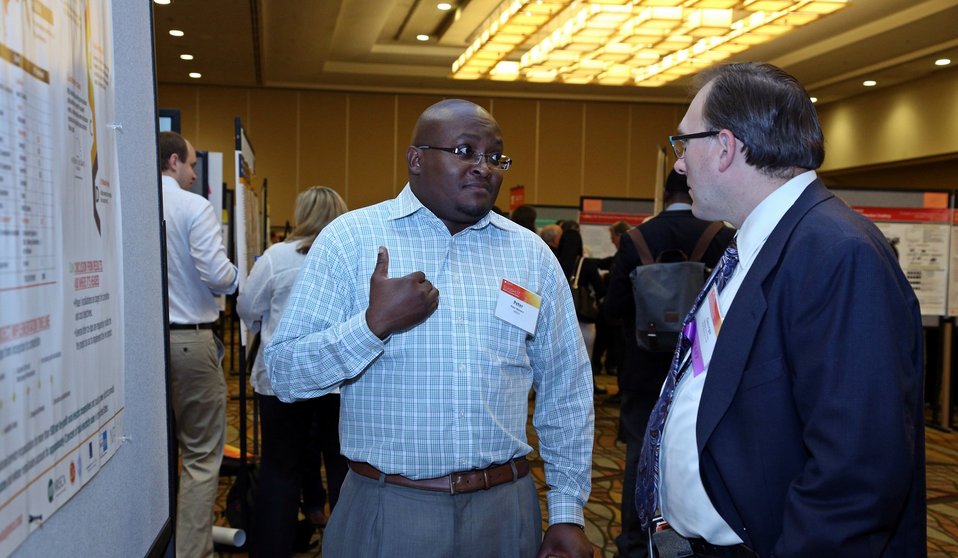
Tech Forum 24

Attendees and awardees discuss posters at the Tech Forum.